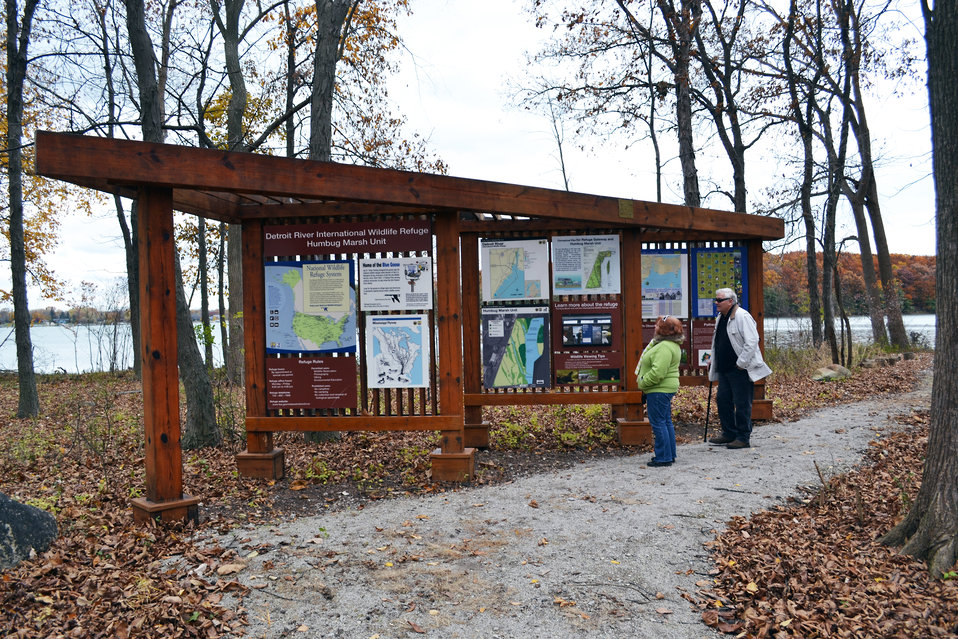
Interpretation

Detroit River International Wildlife Refuge groundbreaking celebration.